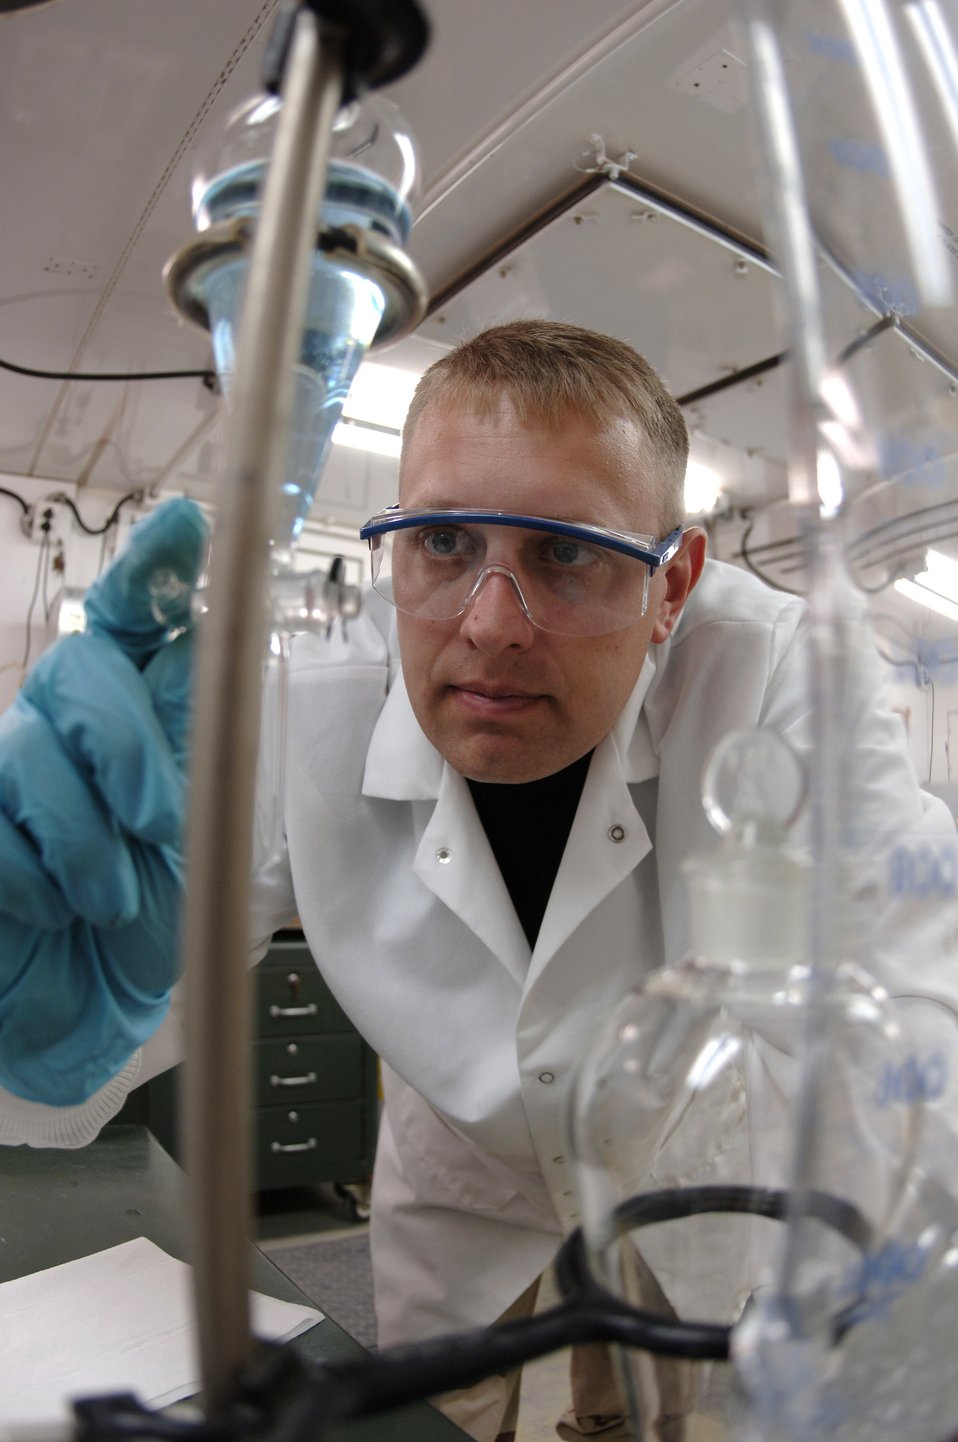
Expeditionary wing supports war efforts in many ways

Fuels technician, Tech. Sgt. Shandon Domenici, performs a specification test Feb. 8 on a sample of jet fuel. The Aerospace Fuels Laboratory in Southwest Asia is the only lab in the area of responsiblity that provides surveillance and field technical assistance on various kinds of aviation fuels, aviator's breathing oxygen and compressed breathing air used by fire and emergency services personnel. Sergeant Domenici is a 379th Expeditionary Logistics Readiness Squadron.